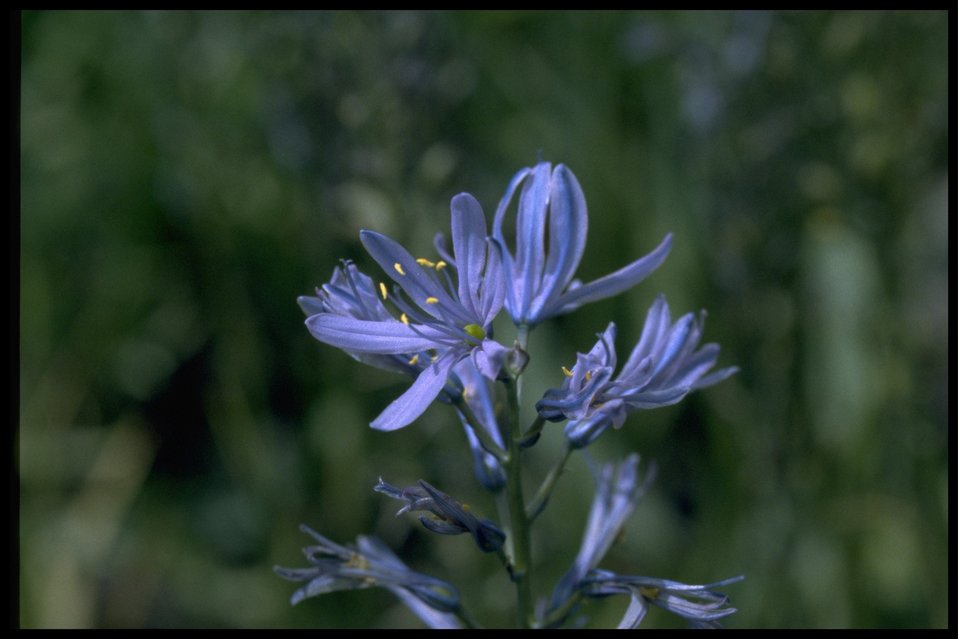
Closeup shot of Cusick's Camas wildflower.